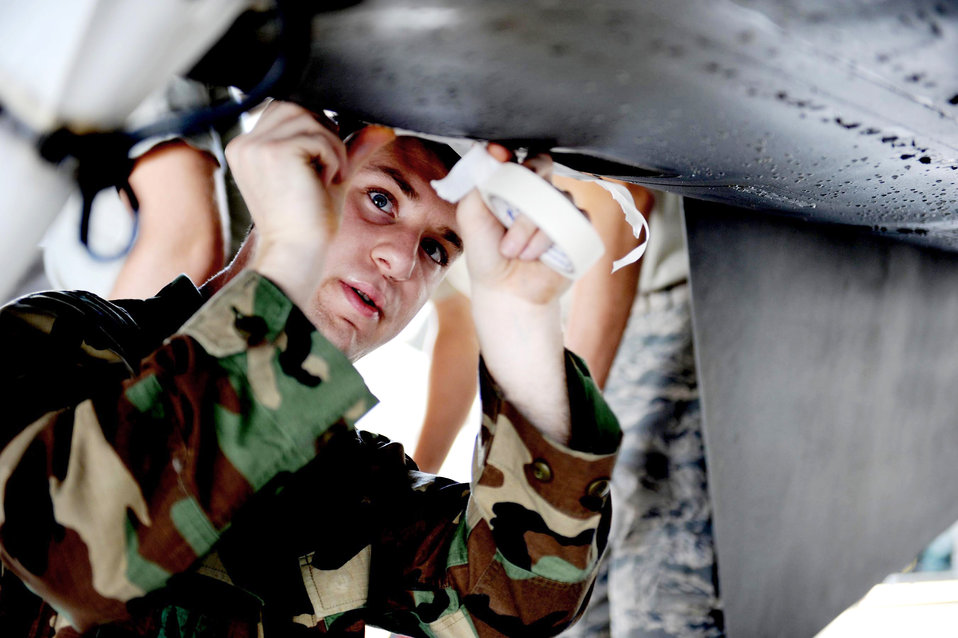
Airman tapes panel on an F-16 Fighting Falcon

Airman 1st Class Dustin Fink tapes up a panel on an F-16 Fighting Falcon from the 79th Fighter Squadron at Shaw Air Force Base, S.C., prior to washing the aircraft. Airmen from the 20th Maintenance Group were participating in an Air Force Smart Operations for the 21st Century rapid improvement event to enhance and improve wash rack operations for F-16 aircraft. Airman Fink is an avionics system apprentice with the 79th FS.